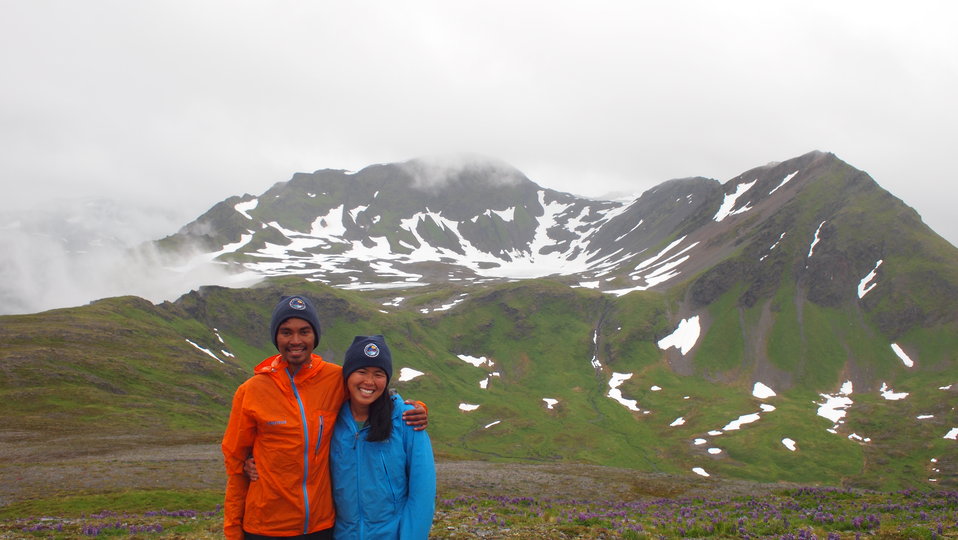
Volunteer biologists

Photo Credit: USFWS
Source: Kodiak NWR